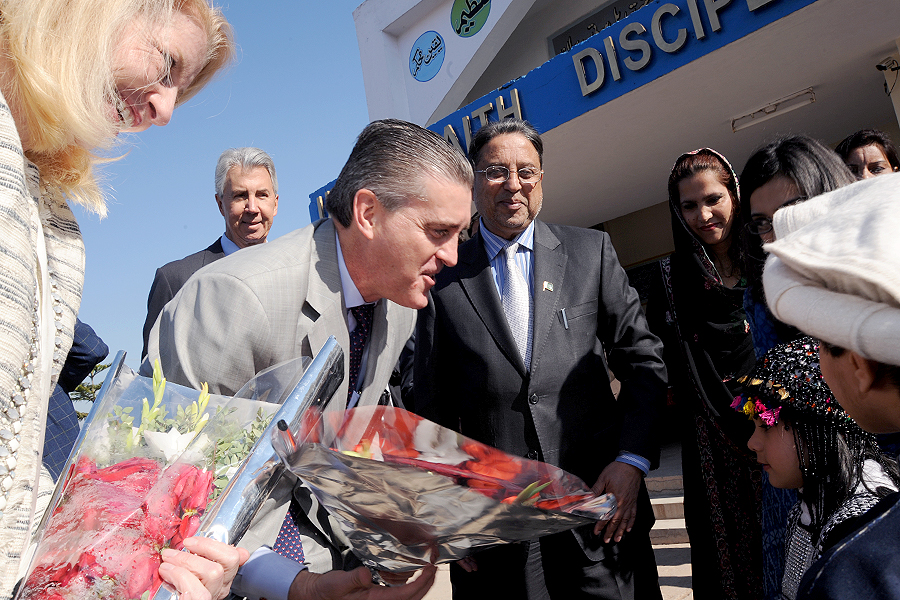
United States and Pakistan Launch the Pakistan Reading Project